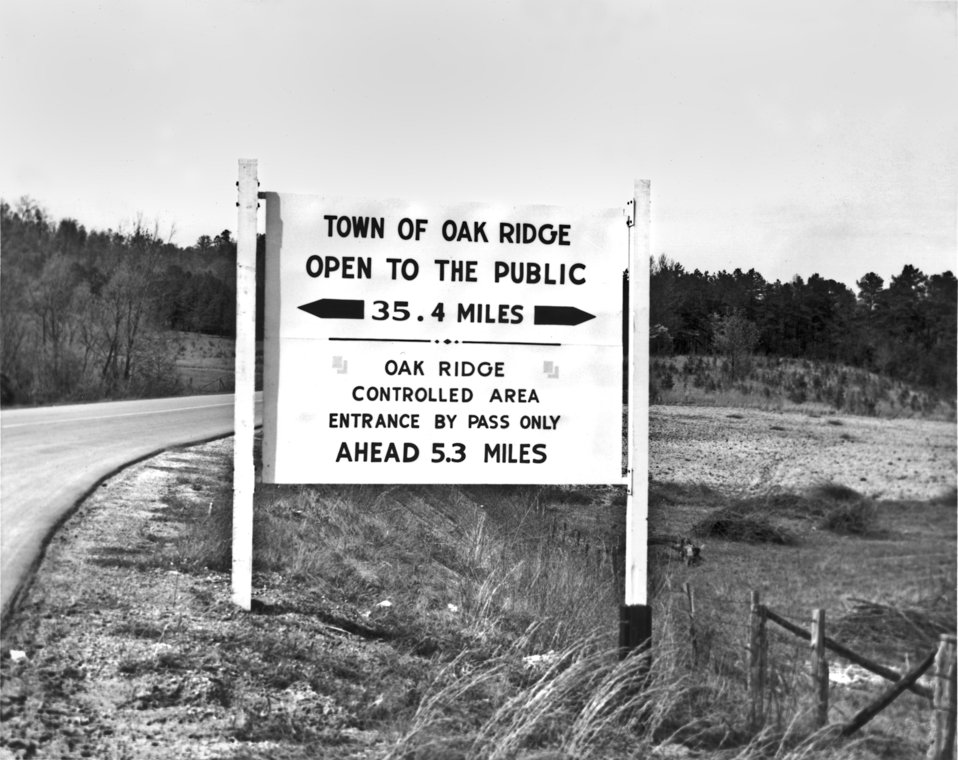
City Limits with Restriction Sign of Town Oak Ridge

MED207 DOE photo by Ed Westcott 4-5-1949 Oak Ridge Tennessee